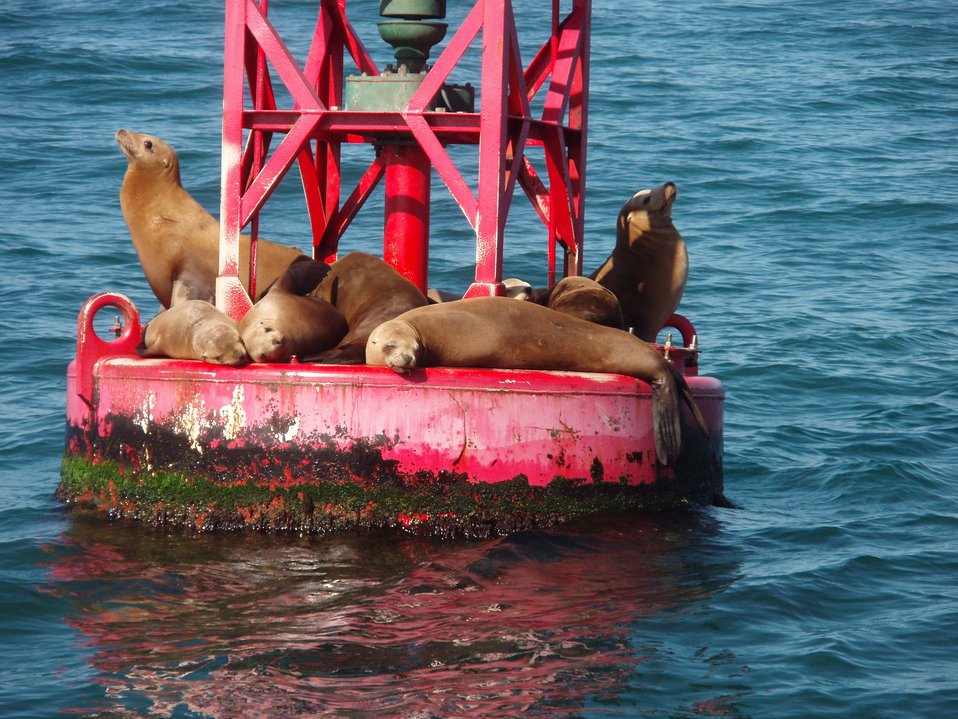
Buoy riding California sea lions (Zalophus californianus).